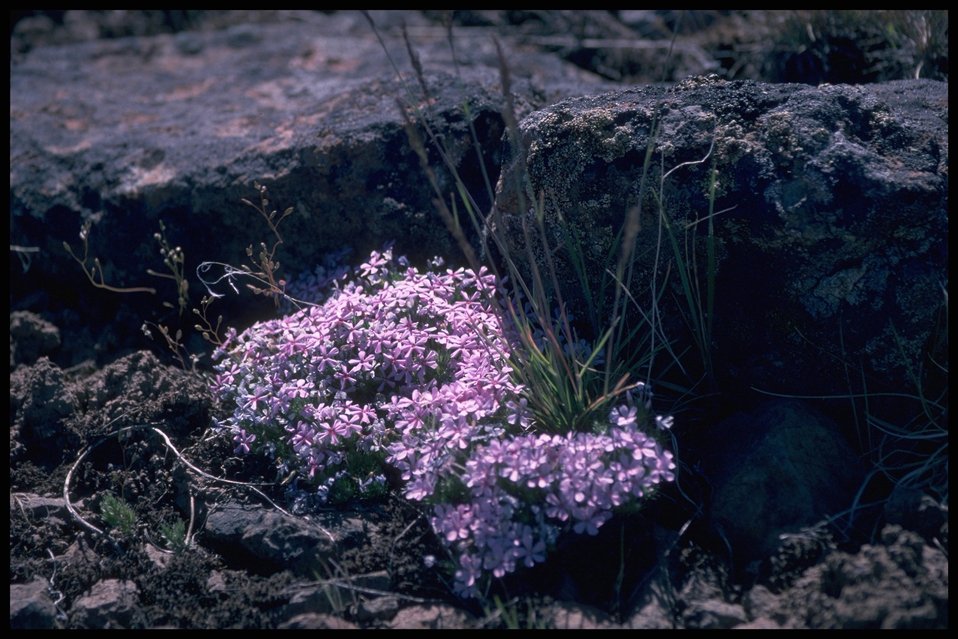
Medium shot of Phlox wildflower habitat, Lakeview District.